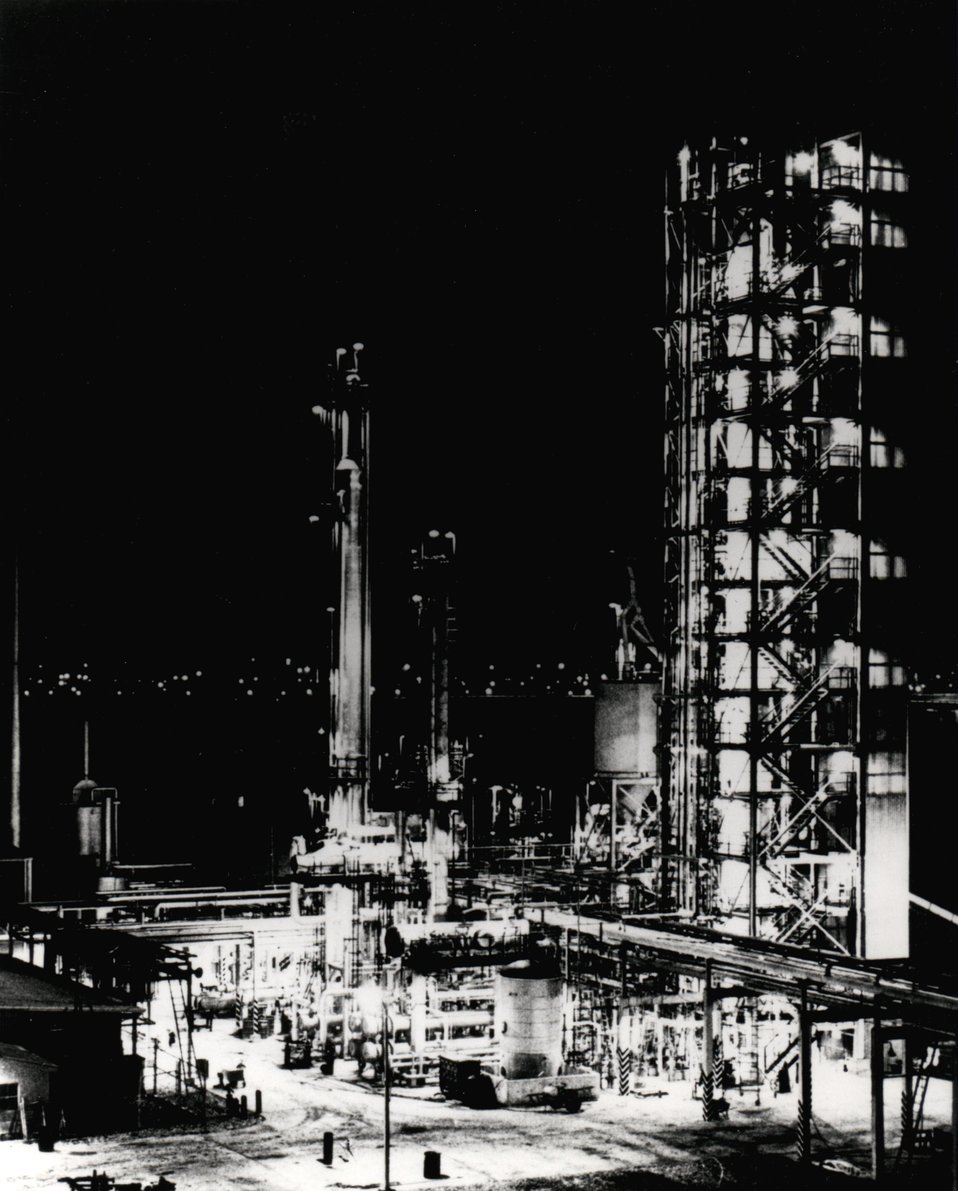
A new process for converting coal to synthetic natural gas is underway at the Energy Research and Development Association's (ERDA) HYGAS coal gasification pilot plant at Chicago, Illinois. Circa 1977.